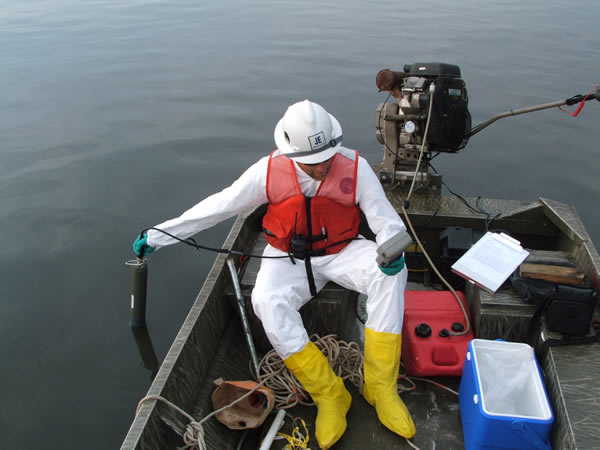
July 2009, Harbor Project Environmental Scientist monitors water quality